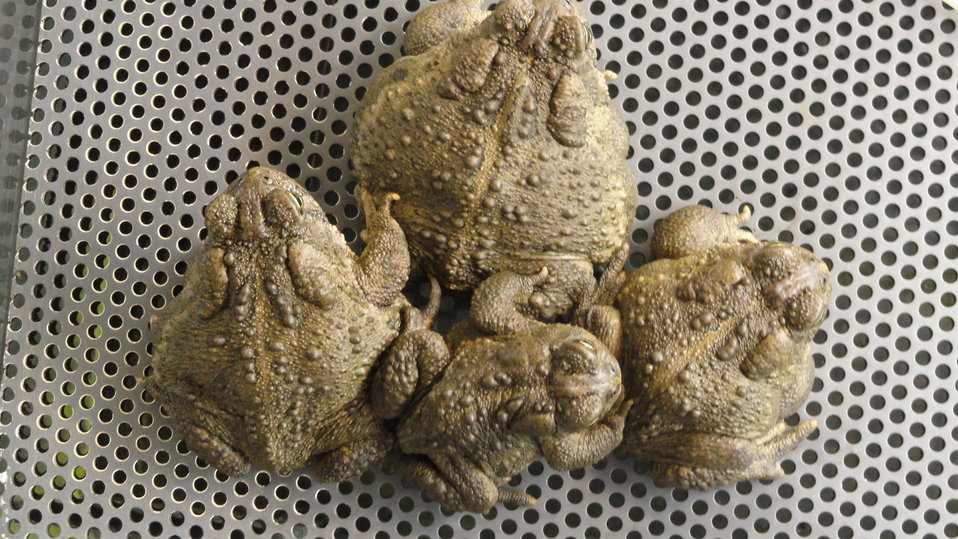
Visiting Saratoga National Fish Hatchery

In April of 2014, regional office employees visited Saratoga National Fish Hatchery to learn more about its efforts towards recovering the Wyoming toad (Bufo baxteri).

The hatchery adopted a unique role in becoming the first unit in the National Fish Hatchery System to become involved in rearing endangered amphibians. The Wyoming toad was a common sight on areas of the Laramie Plains, Albany County, Wyoming, into the early 1970s but the species' populations crashed in the mid-1970s. The Wyoming toad was listed as endangered by the U.S. Fish & Wildlife Service in January 1984. Found only in southwestern Wyoming, the Wyoming toad is considered the most endangered amphibian in North America. The hatchery maintains a captive population for breeding, rearing, and refugia, and the offspring from this program will be used for reintroduction efforts.